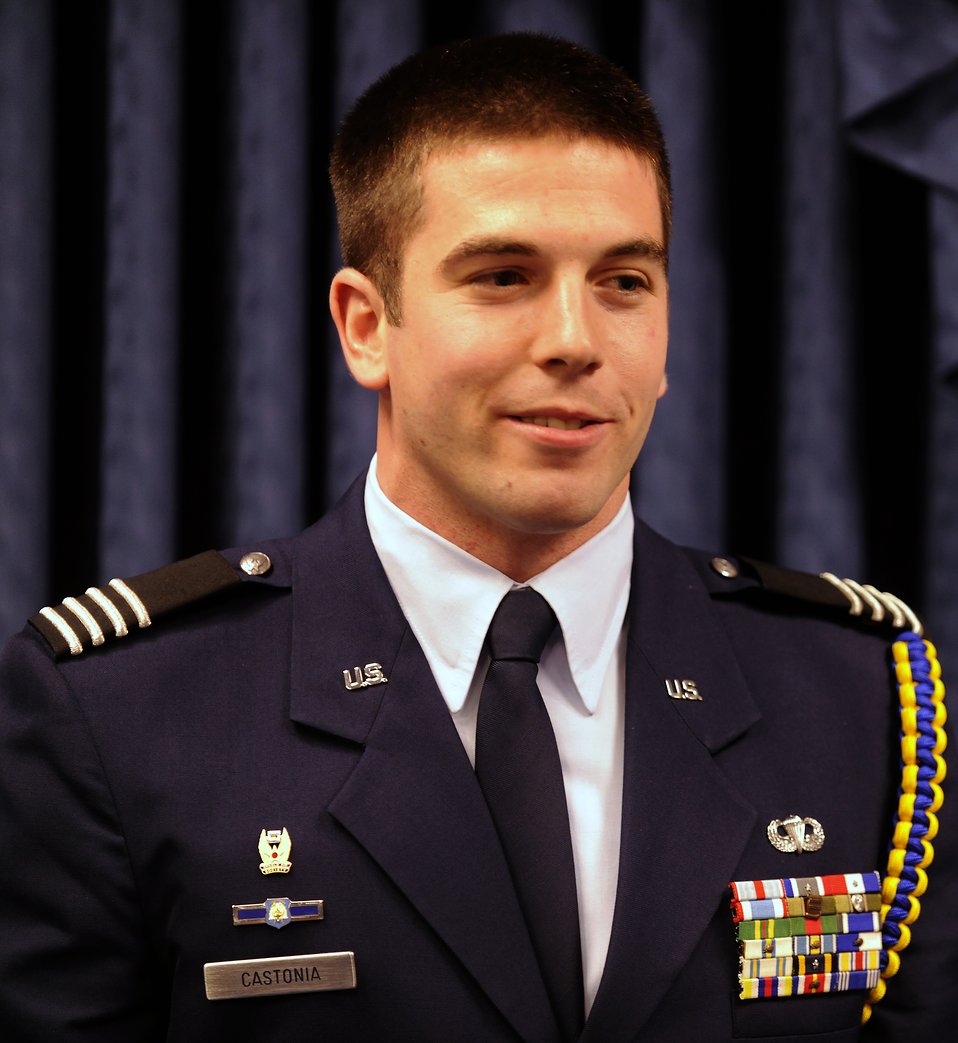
Cadet of the Year

Cadet Col. Ryan W. Castonia thanks those who witnessed his receiving the U.S. Air Force Cadet of the Year award for 2009 in the Pentagon April 5, 2010. The award was presented by Air Force Chief of Staff Gen. Norton Schwartz. Cadet Castonia is a graduate student at Massachusetts Institute of Technology and is a member of MIT's Reserve Officer Training Corps. He also was honored by the Air Squadron, a private British aviation organization, and received the Air Squadron's coin from Air Commodore Ian Elliot, a Royal Air Force attache' assigned to the British Embassy in Washington.